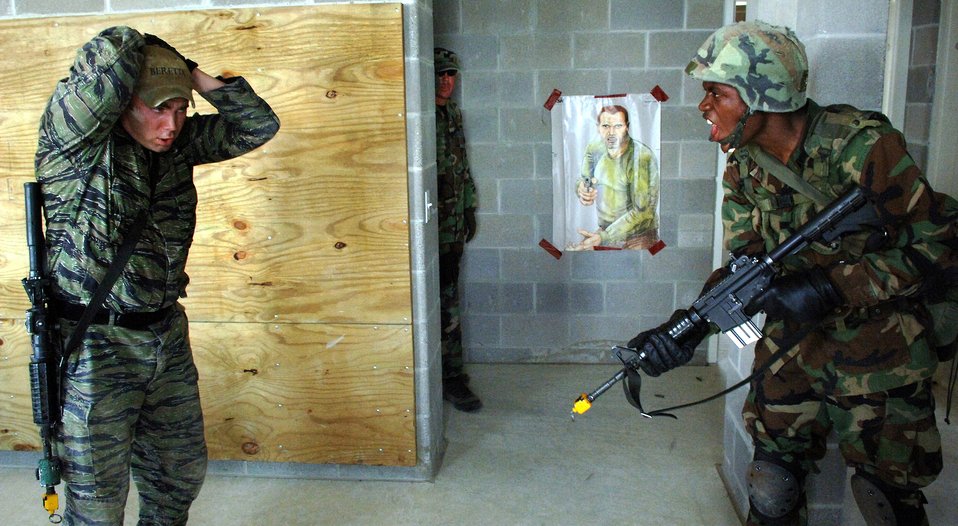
Experience a key training tool at Security Forces Academy

Airman Stephen Brown, right, shouts instructions to Staff Sgt. Travis Crawley who is playing the role of a terrorist during the Security Forces Academy training at Camp Bullis, Texas, on Wednesday, July 19. The 343rd Training Squadron instructs Airmen on air base defense and combat operations. Sergeant Crawley is an instructor for the 343rd TRS.